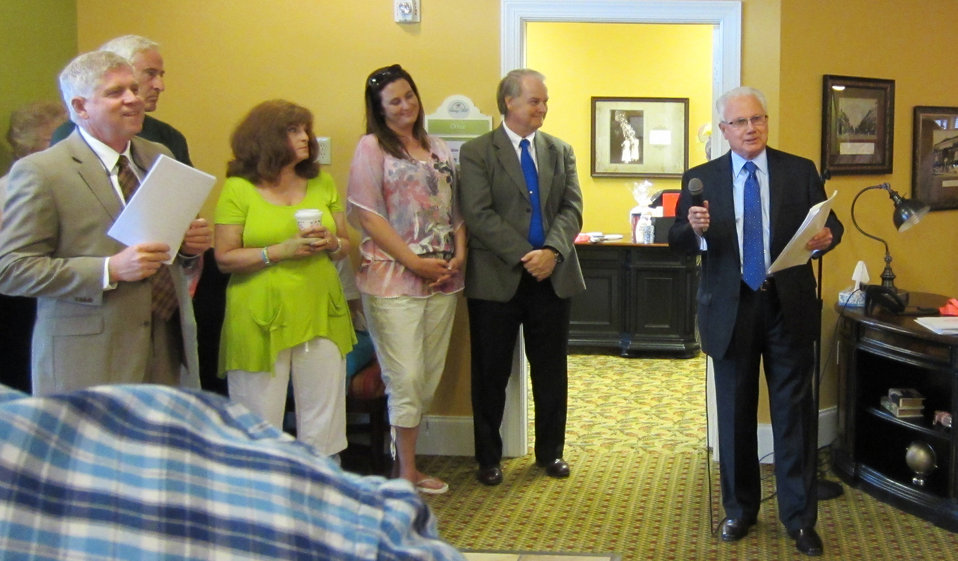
Daisy Hill - Fern speaking

U.S. Department of Agriculture (USDA) Rural Development (RD) Kentucky State Director Tom Fern (right) speaks at the opening of the Daisy Hill Assisted Living facility in Versailles, KY. The building was funded with a U.S. Department of Agriculture (USDA) Rural Development (RD) Business and Industry Guarantee (BIG) Loan program.